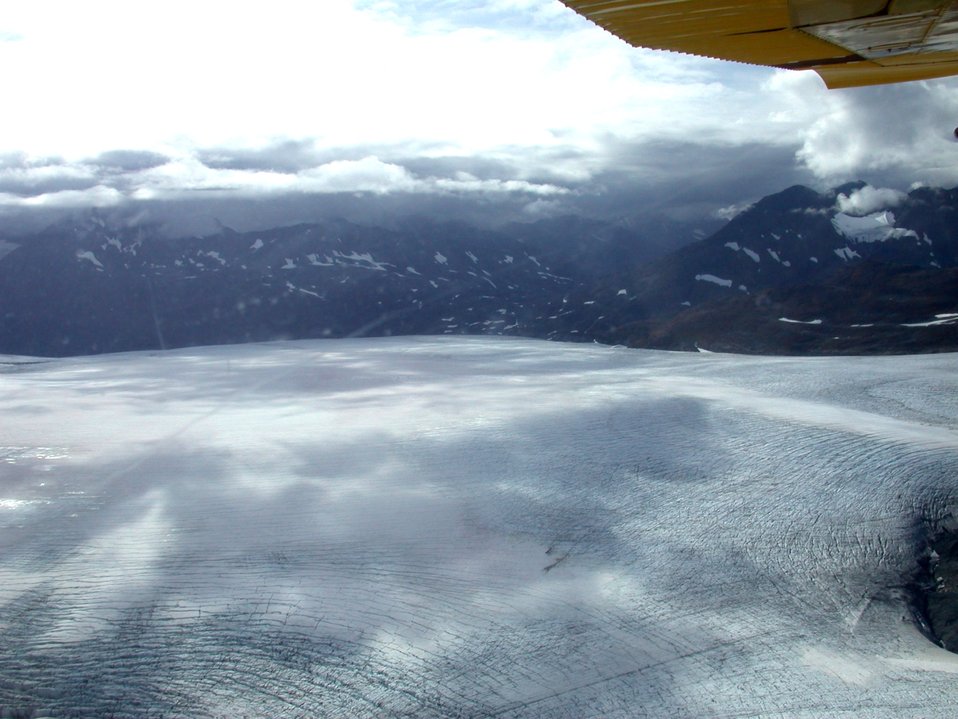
Float plane sightseeing along the Richardson Highway. Note cracks in glacier.